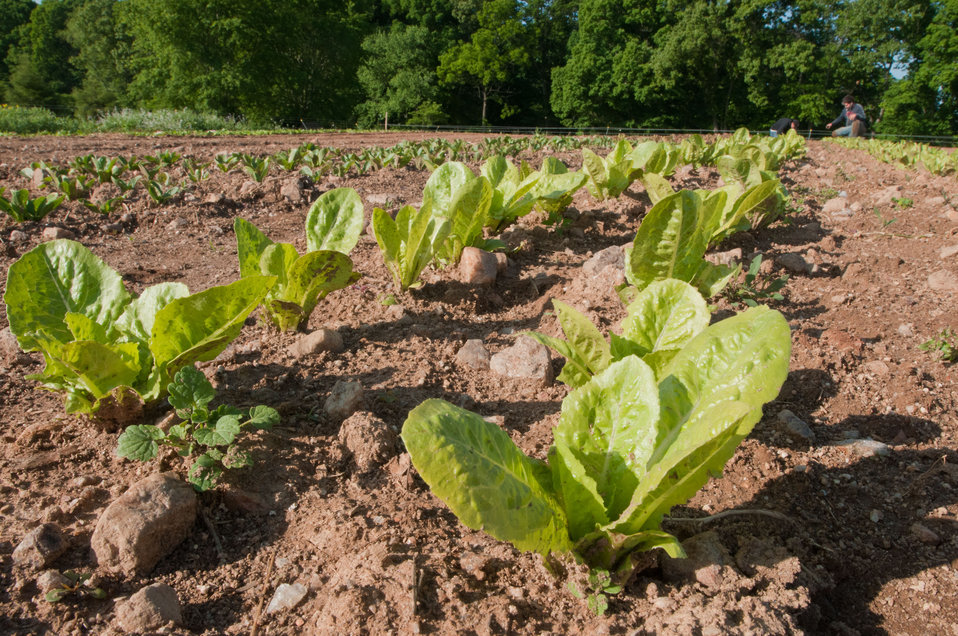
Andrew Myers (left) and Christopher Douherty hand harvest baby-lettuce leaves at the Manakintowne Specialty Growers, a 21-acre farm in Powhatan County, Virginia, on Friday, May 6, 2011. Specialty produce for chefs and markets of Richmond, Charlottesville and Williamsburg, is raised on the farm. The plants continue to grow leaves and can be harvested several times before they have to be replaced. Rotating the crop types and using proper intervals, maintain sustainable soil and plant health. This is one of the farms that produces unique greens such as French Sorrel, Pea Shoots, Frisee, Tat soi, Mizuna, Pink/green radish shoots, Sunflower shoots, Baby red mustard, Tuscan Kale, Beet greens. All harvested by hand, micro greens such as Pak choi, Tat soi, Mizuna, Purple kohlrabi, Shungiku (edible chrysanthemum), Ruby chard, Purple/Daikon/Triton radish, Red amaranth and Bull's Blood Beet as well as edible flowers such as African Blue Basil, Nasturtiums, Johnny Jump Ups, and Chive blossoms Dianthus (pinks).. The seasonal choices are listed by suppliers and ordered by members on Lulus Local Food website, the food is distributed to pick-up points in the Richmond area. Together, they offer a wide variety of household food staples and specialty fruits, vegetables, meats, soaps, eggs, cheeses, flowers, honey, pastas, sauces, syrups, baked goods, mushrooms, flour and grains from and for the Richmond area.